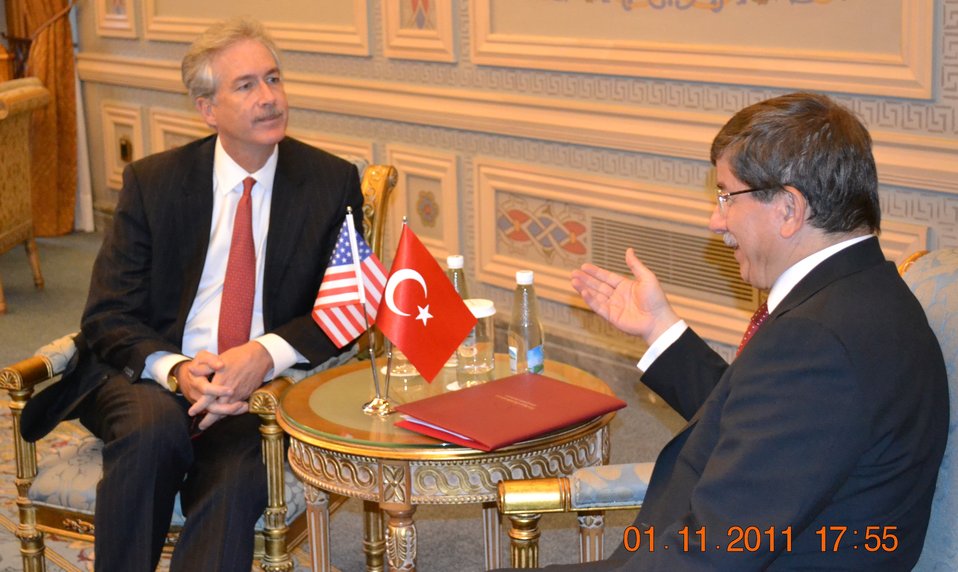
Deputy Secretary Burns Meets With Turkish Foreign Affairs Minister Davutoglu

U.S. Deputy Secretary of State William J. Burns meets with Turkish Foreign Affairs Minister Ahmet Davutoglu during the Istanbul Conference for Afghanistan at the Ciragan Palace in Istanbul, Turkey, on November 1, 2011.